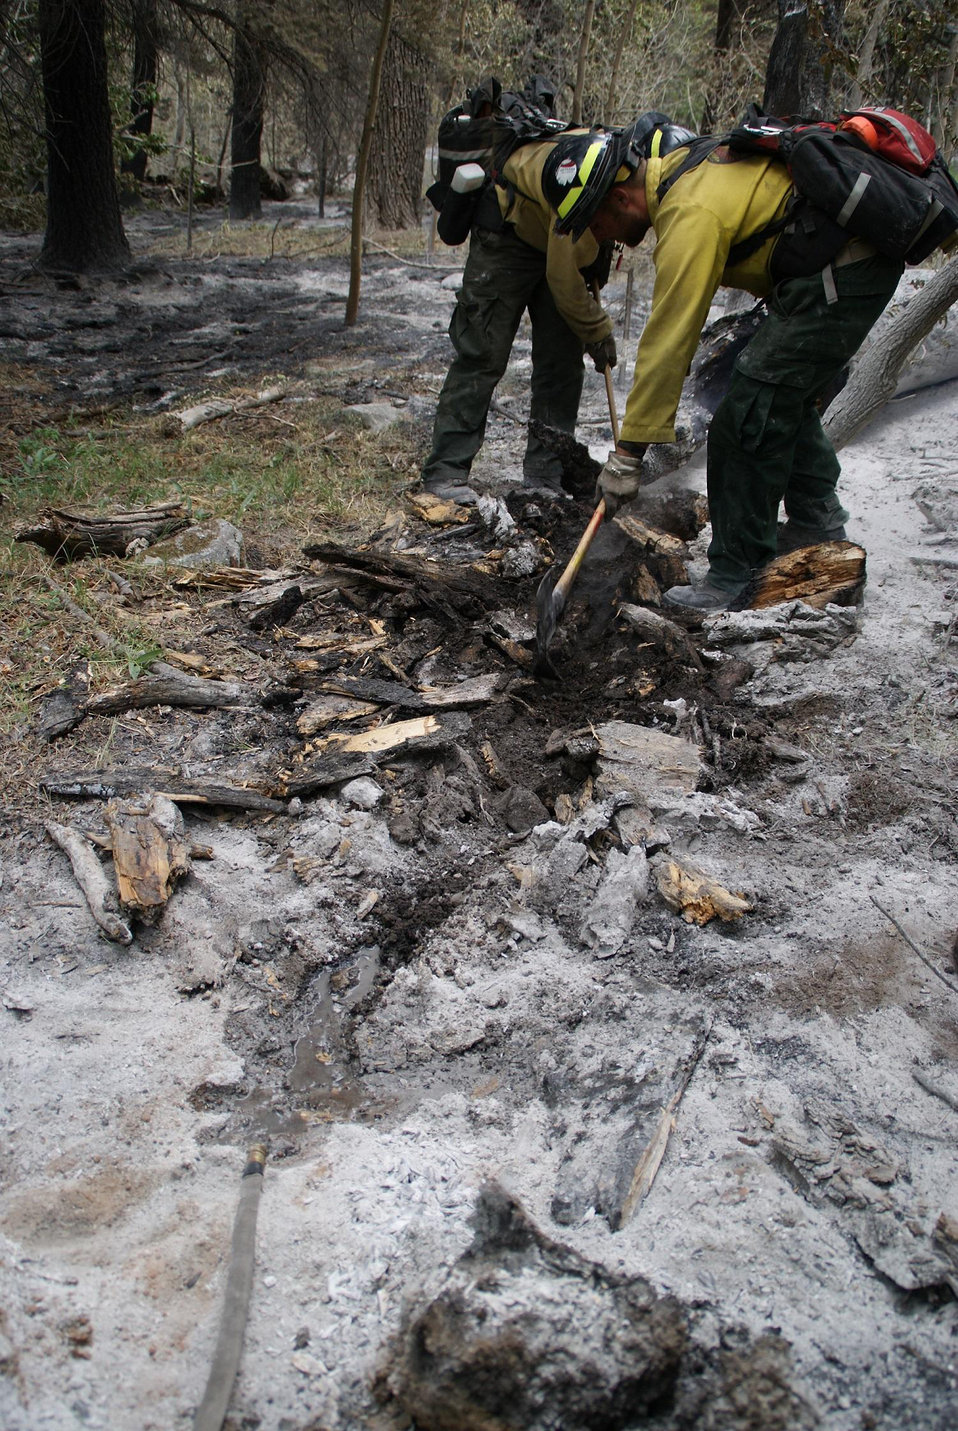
Firefighters check scorched areas for any burning embers that might start a new fire at the East Peak Fire near Walsenburg, CO. The East Peak Fire located approximately 10 miles southwest of Walsenburg, CO began on Jun. 19, 2013 by lightning has consumed approximately 12, 996 acres. As of Jun. 28, 2013 the fire is 85% contained with 13, 521 acres burned. Due to the steep terrain, very heavy timber and continued dry conditions, there is still a potential for spot fires and thus, the fire will not reach 100 percent containment until sufficient interior mop up is complete.